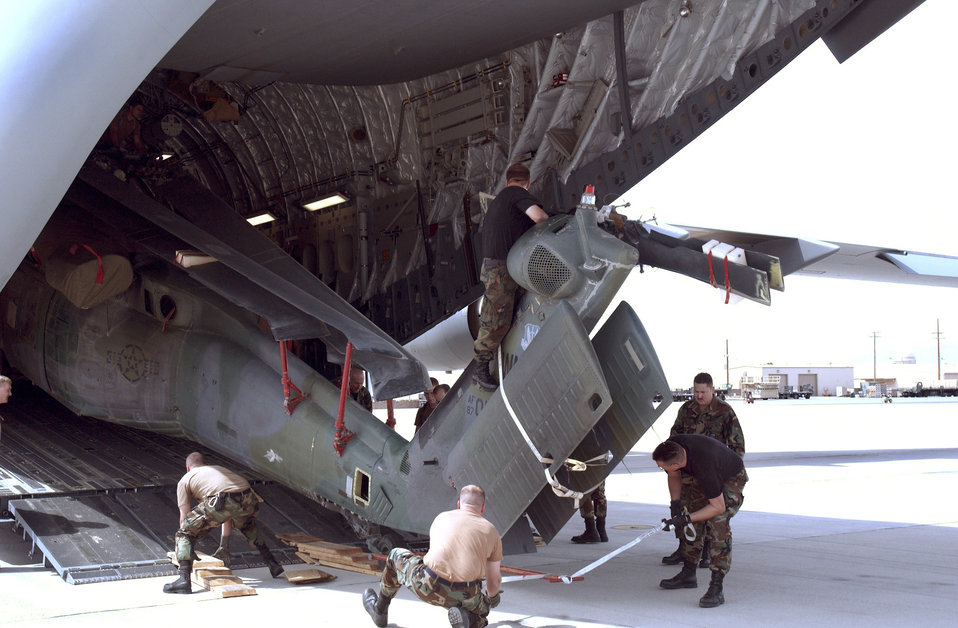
Heavy load

OPERATION IRAQI FREEDOM -- Maintenance troops from the 57th Aircraft Maintenance Squadron Nellis Air Force Base, Nevada unload a HH-60G Pave Hawk from the C-17 Globemaster III. The helicopter was brought back from an undisclosed location in support of Operation Iraqi Freedom.